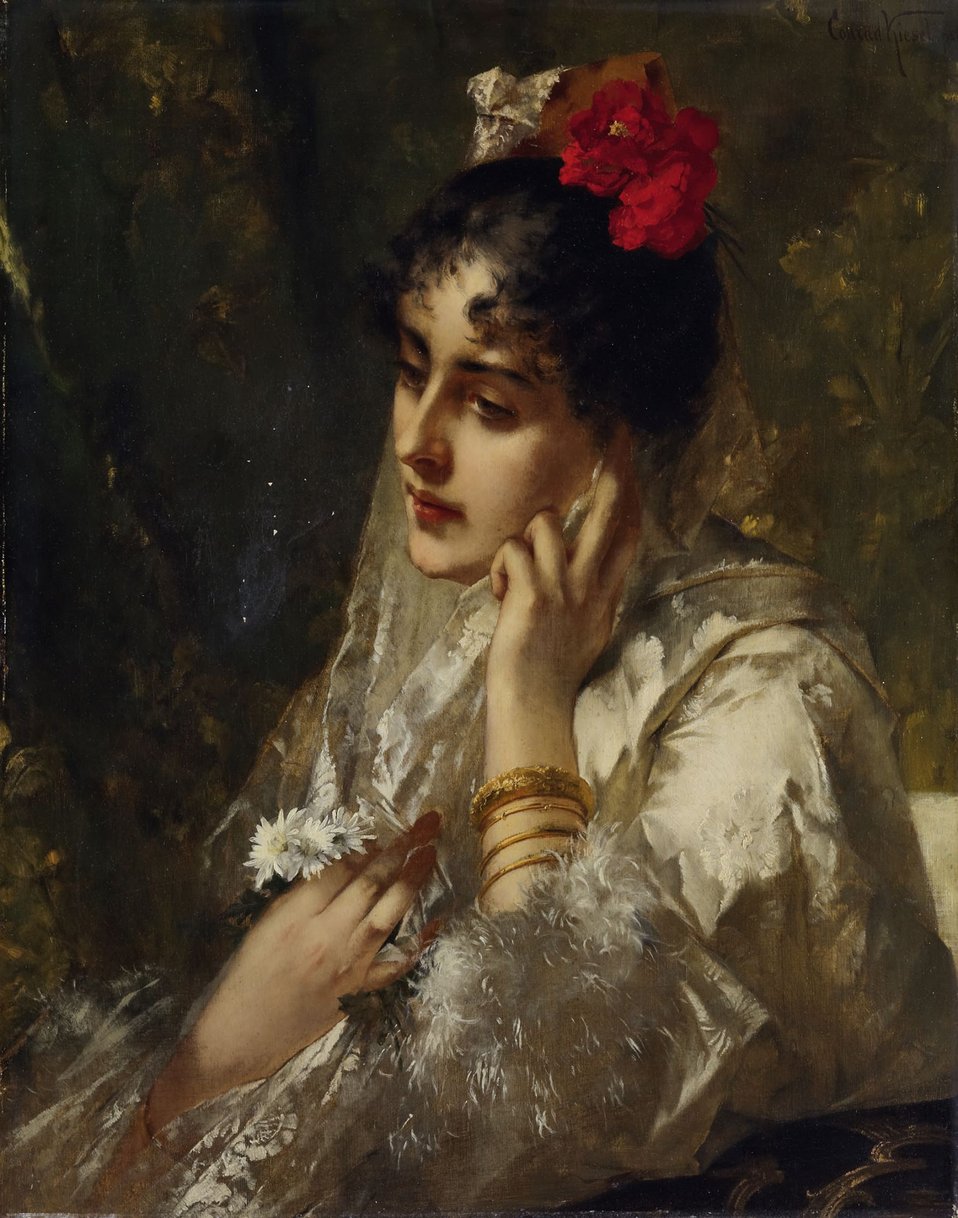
Conrad Kiesel Jeune Espagnole